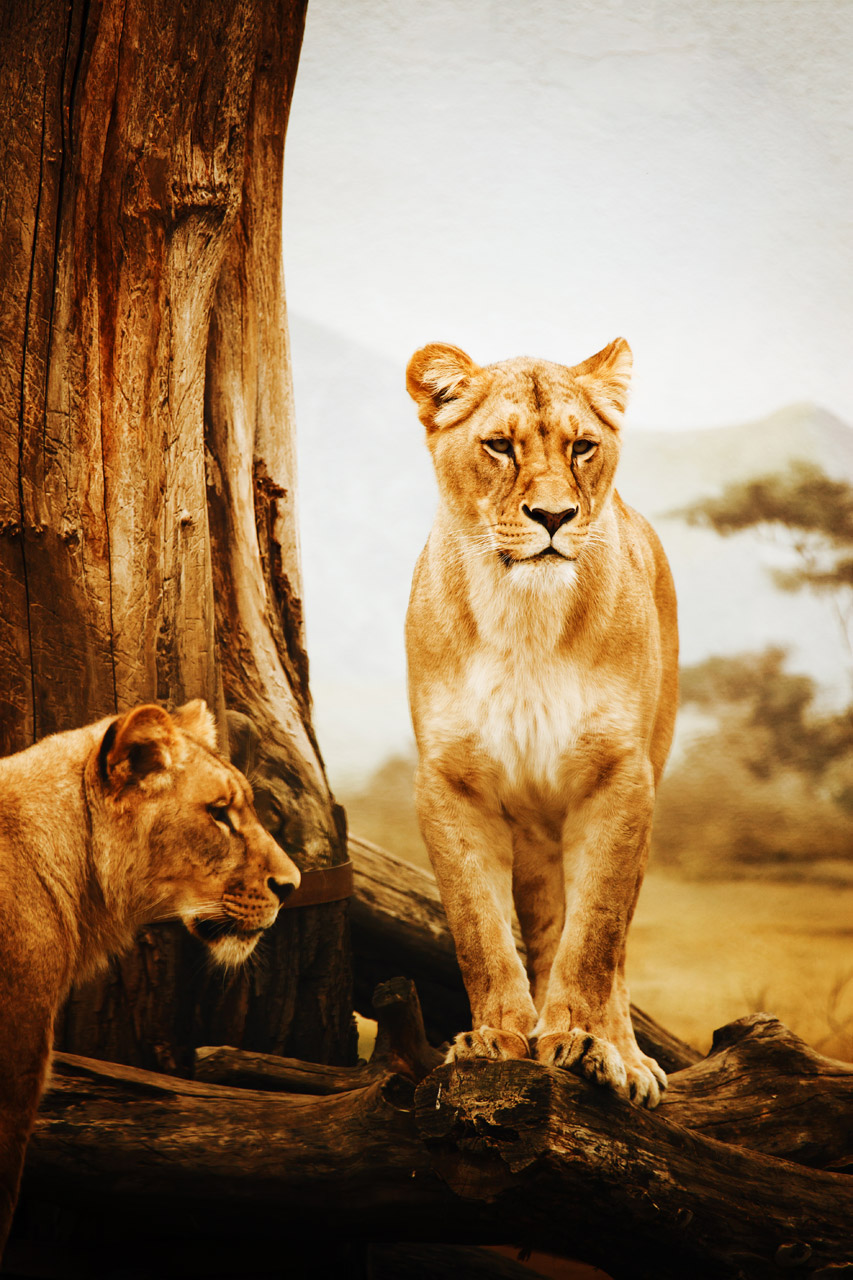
Lioness in africa

Two lions standing in dry yellow environment, one of them is on the log.